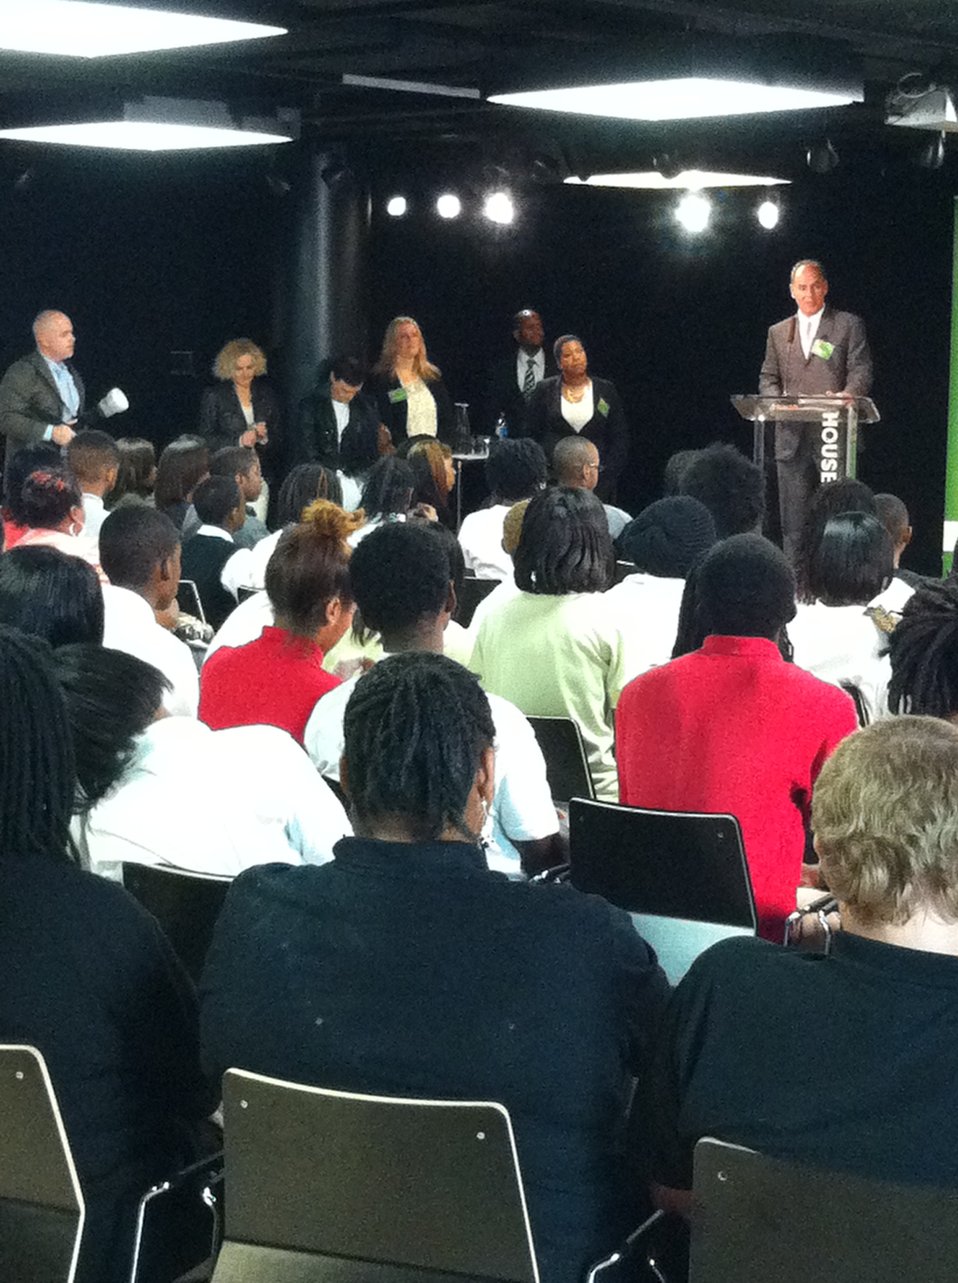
Mentor 7